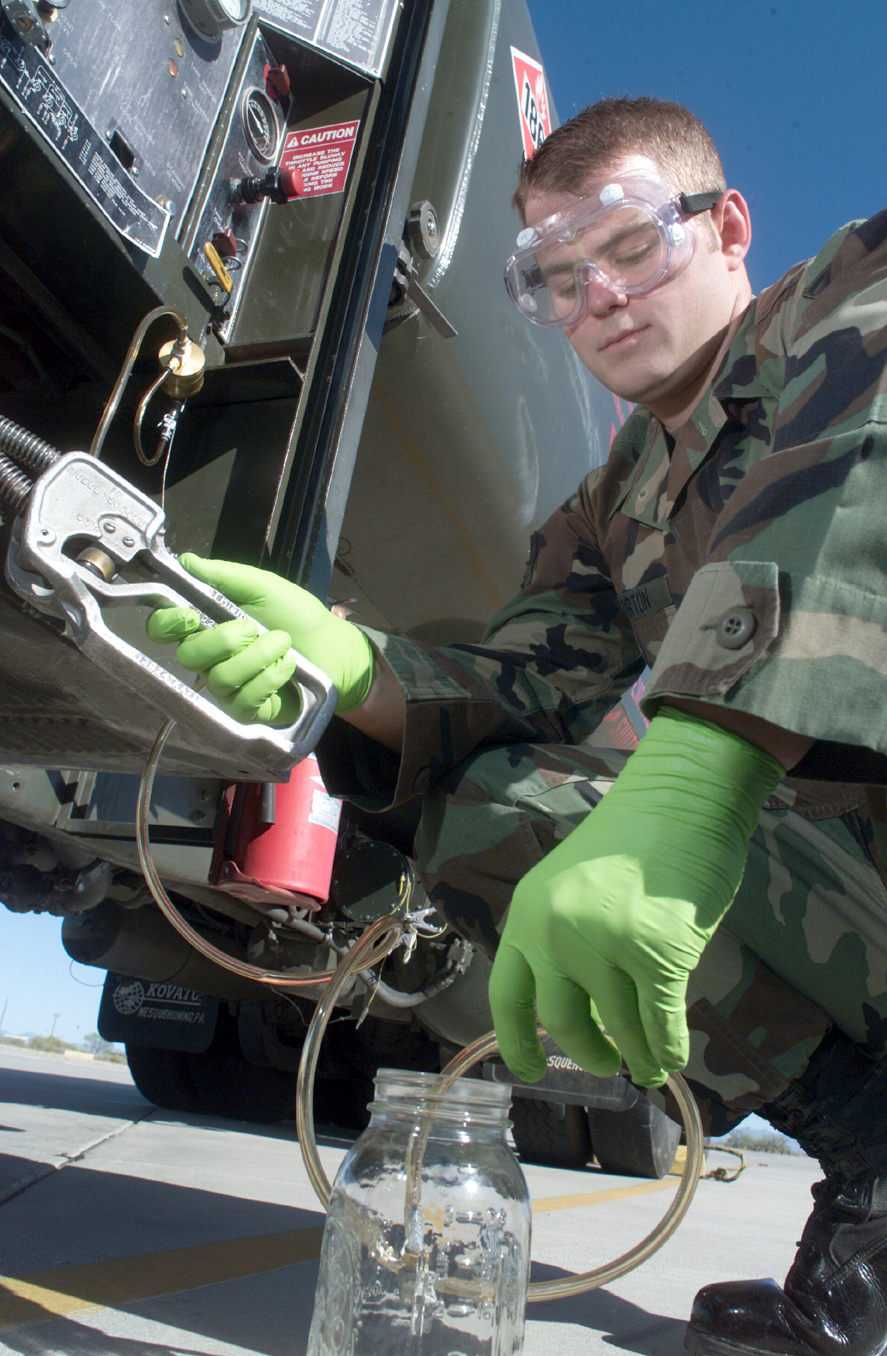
Taking care of business

DAVIS-MONTHAN AIR FORCE BASE, Ariz. -- Airman 1st Class Phillip Norton takes a sample of fuel to ensure that the base's fuel remains within standards. He is a fuels distribution operator with the 355th Logistics Readiness Squadron here.